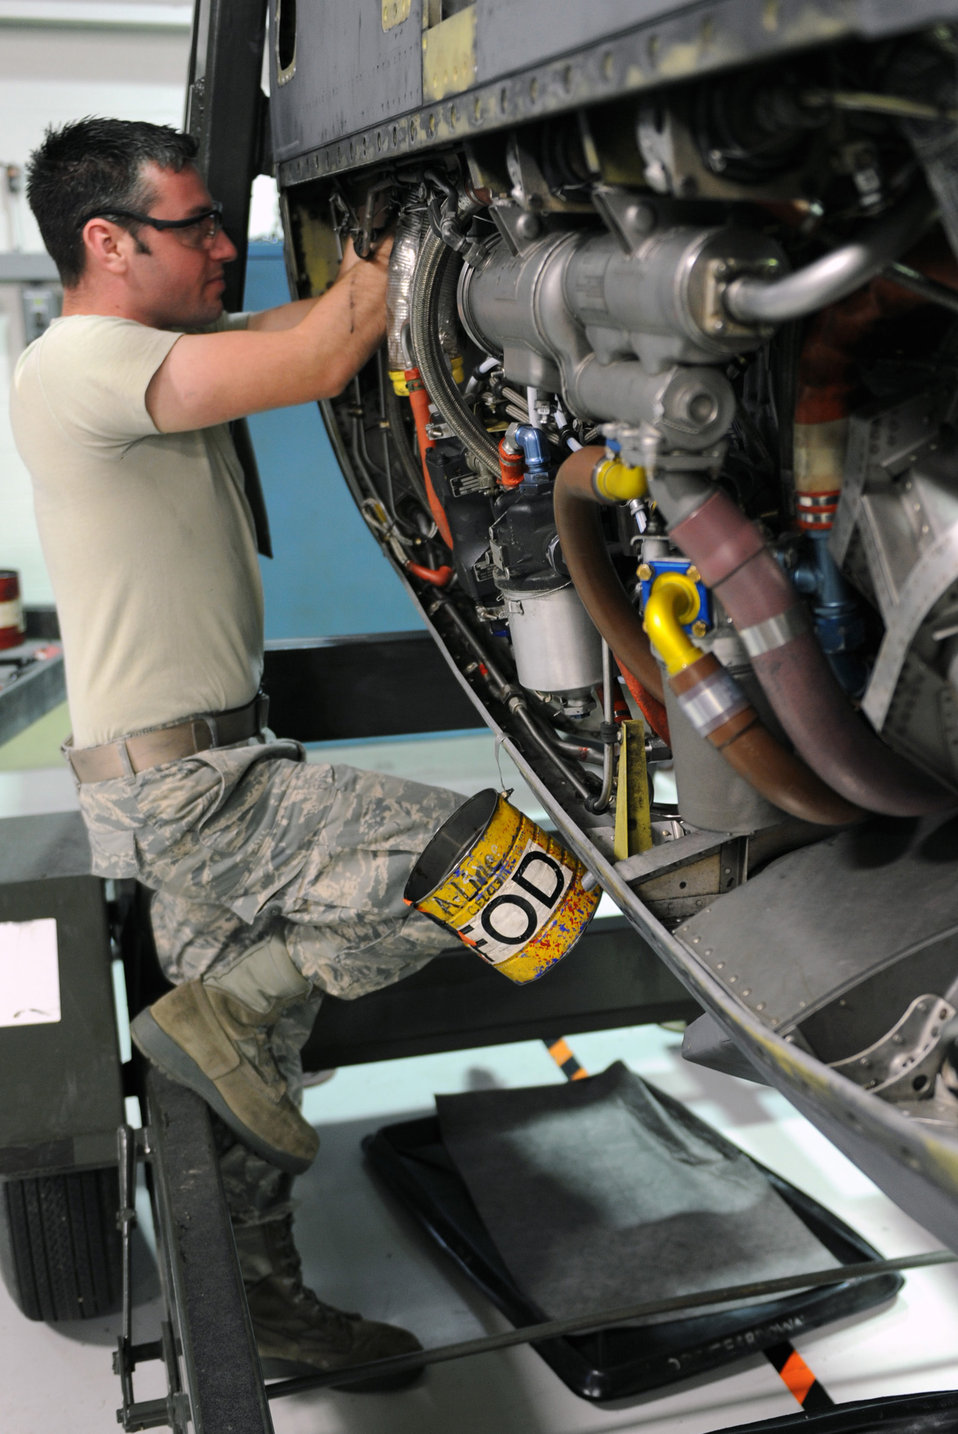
C-130 engine maintenance

Staff Sgt. Jeffery Crosby installs a fuel nozzle on a C-130 Hercules engine May 31, 2011, at Little Rock Air Force Base, Ark. Sergeant Crosby is an aerospace propulsion journeyman assigned to the 19th Component Maintenance Squadron.